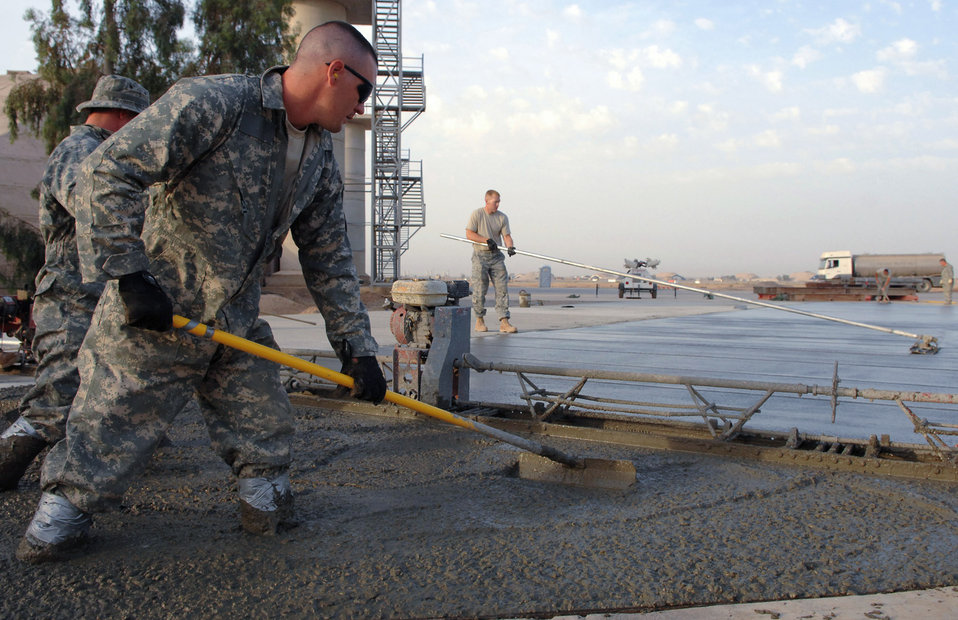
'Dirt Boyz' pave way for aircraft, Airmen

Staff Sgt. Ryan Ward pushes wet concrete around to ensure even dispersion May 13 at Balad Air Base, Iraq. Sergeant Ward is a 332nd Expeditionary Civil Engineer Squadron heavy equipment operator deployed from McConnell Air Force Base, Kan.